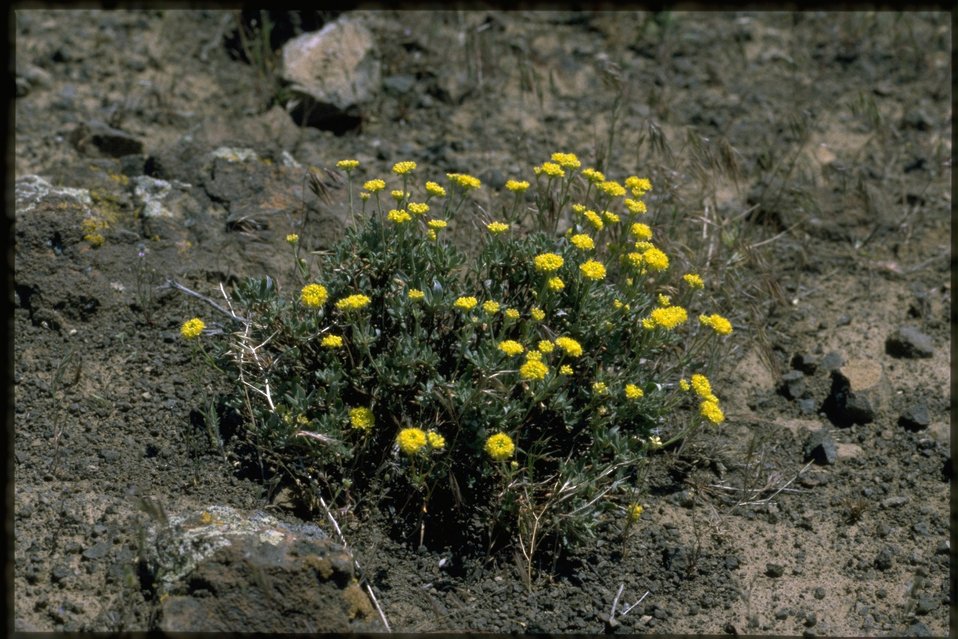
Farshot of Erigonum.